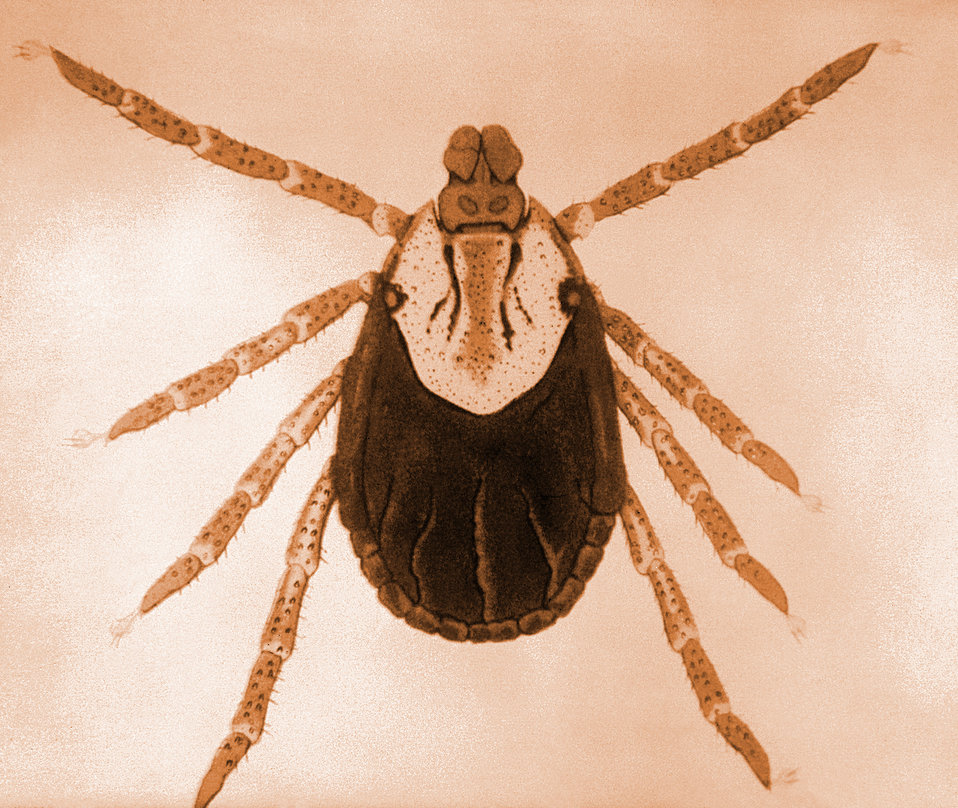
This illustration depicts a dorsal view of a female 'hard', or Ixodidae 'American dog tick', Dermacentor variabilis.